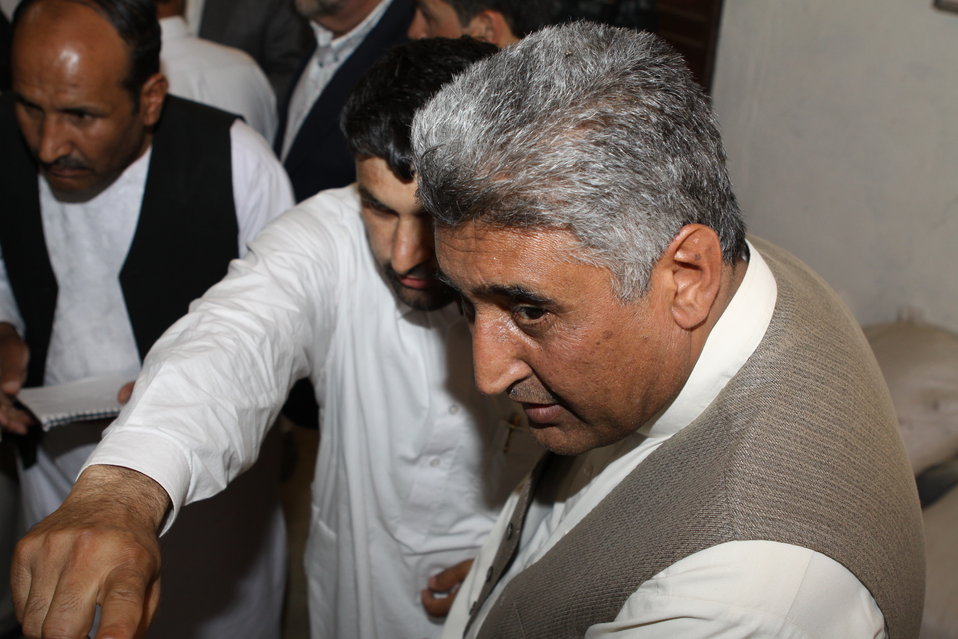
Bolan Poultry Farm